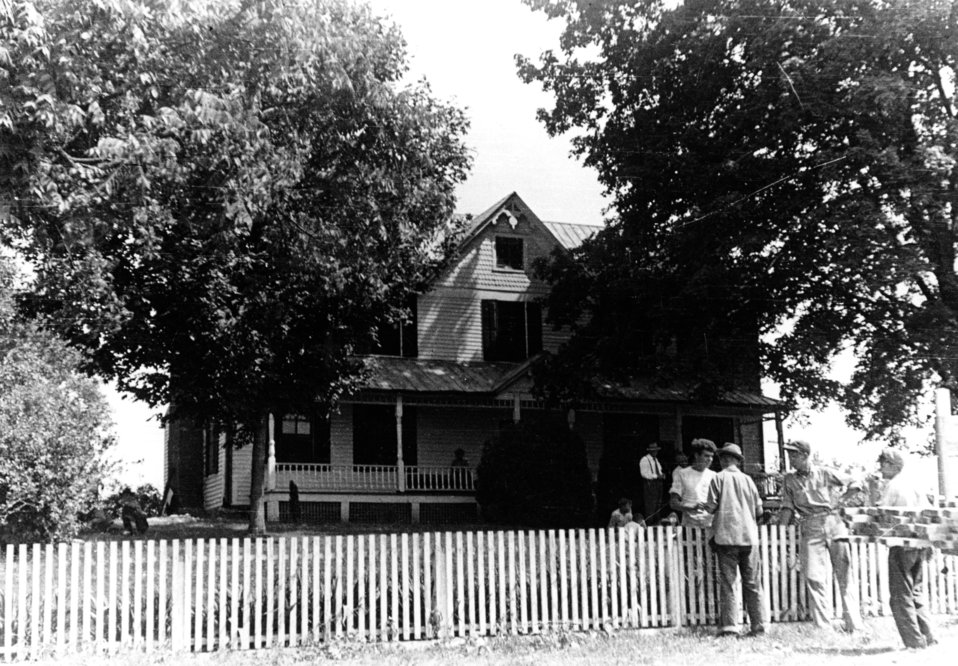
Construction activity at Oak Ridge